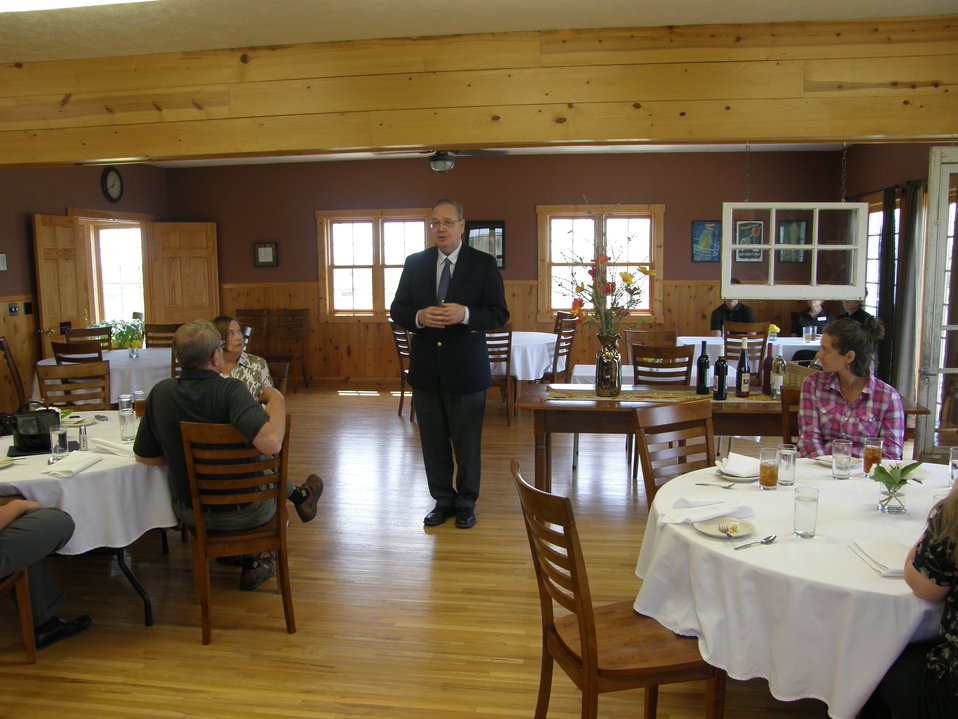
Agriculture Under Secretary for Rural Development Dallas Tonsager visited the birthplace of Agriculture Secretary Henry A. Wallace on Tuesday, May 15, 2012. Today was also the 150th anniversary of the U.S. Department of Agriculture. Wallace, perhaps the most well-known Agriculture Secretary, served from March 4, 1933 until September 4, 1940. He also served as Vice President of the United States from 1941 to 1945 under President Franklin D. Roosevelt and Secretary of Commerce from 1945 to 1946.